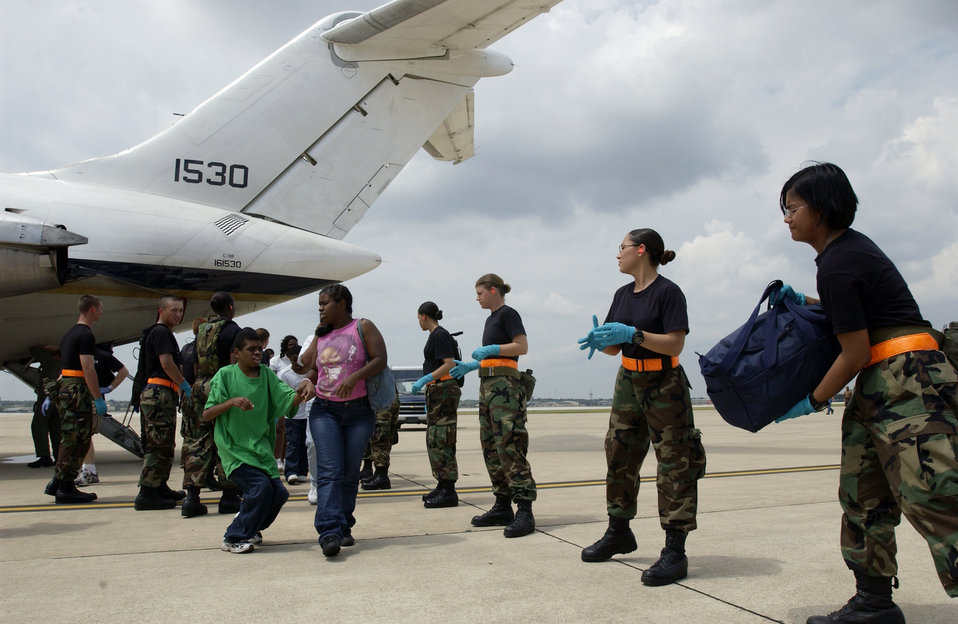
Price family glad to leave New Orleans

LACKLAND AIR FORCE BASE, Texas -- Airmen with the 320th Training Squadron here help unload luggage from a C-9 Nightingale aircraft that brought Hurricane Katrina evacuees from New Orleans on Sept. 3. Evacuees are being inprocessed, given a medical checkup, fed and put into temporary shelters.